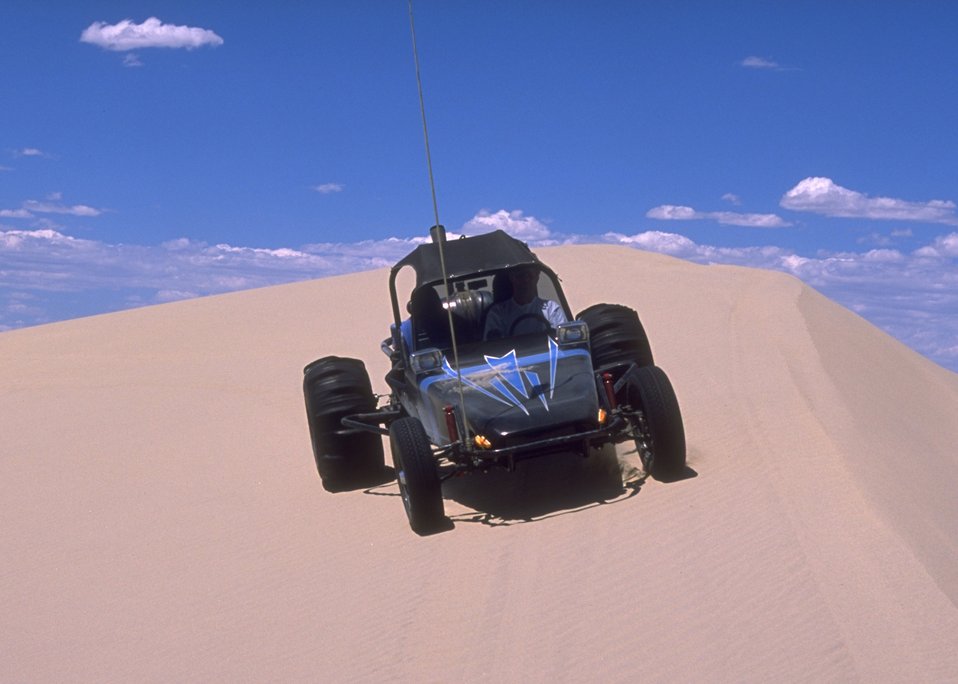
Sand Dunes OHV Area, RSFO.